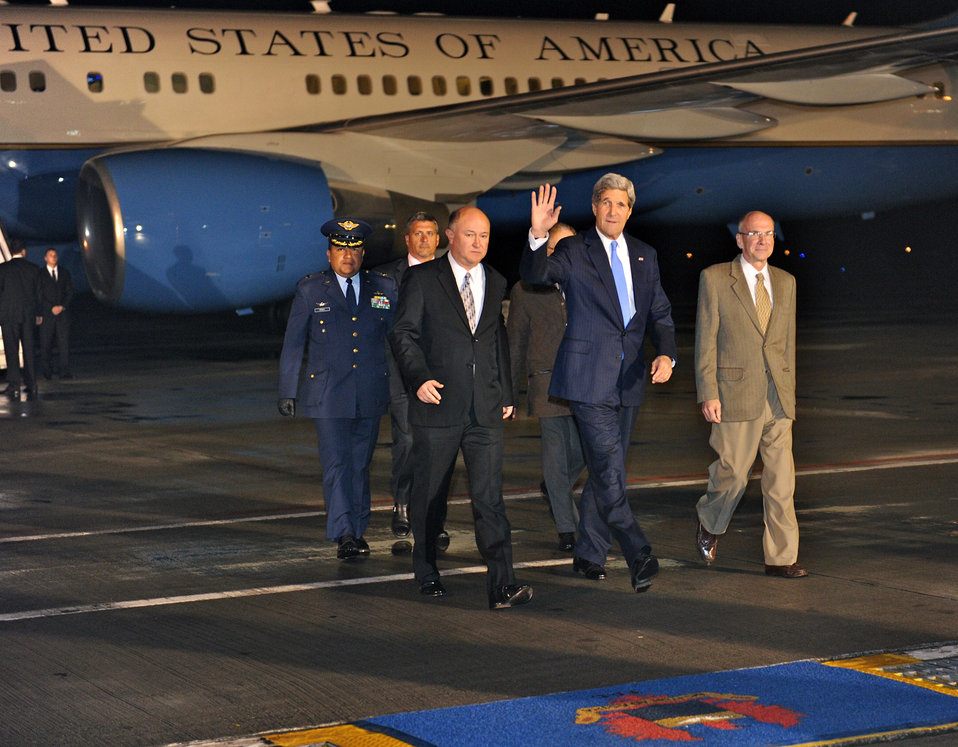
Secretary Kerry Arrives in Bogota, Colombia

U.S. Secretary of State John Kerry, accompanied by U.S. Ambassador to Colombia Michael McKinley, waves to onlookers as he arrives in Bogota, Colombia, on August 11, 2013.